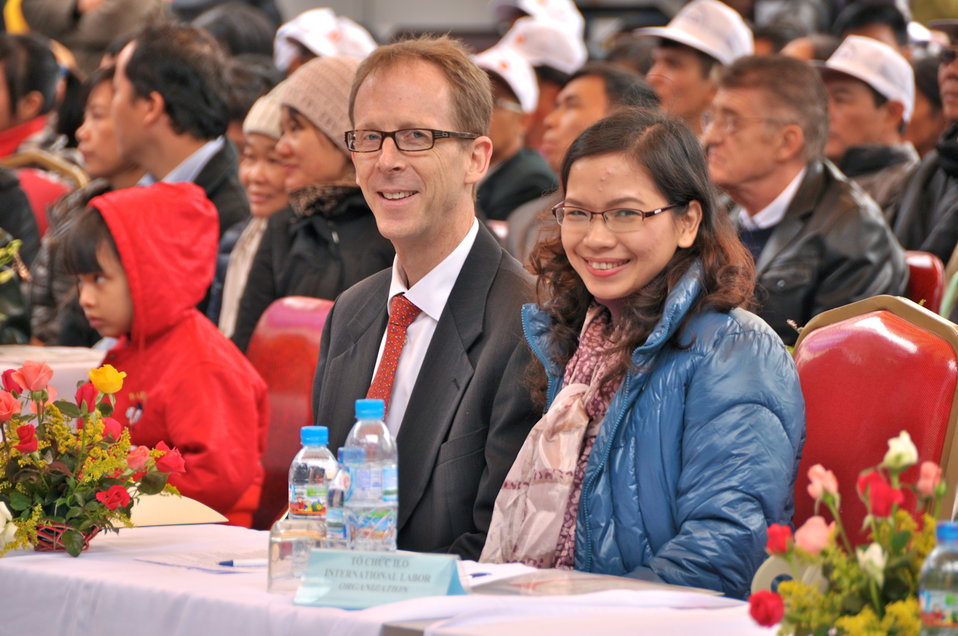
USAID joins celebration of International Day of Persons with Disabilities in Hanoi, Vietnam

December 2, 2012